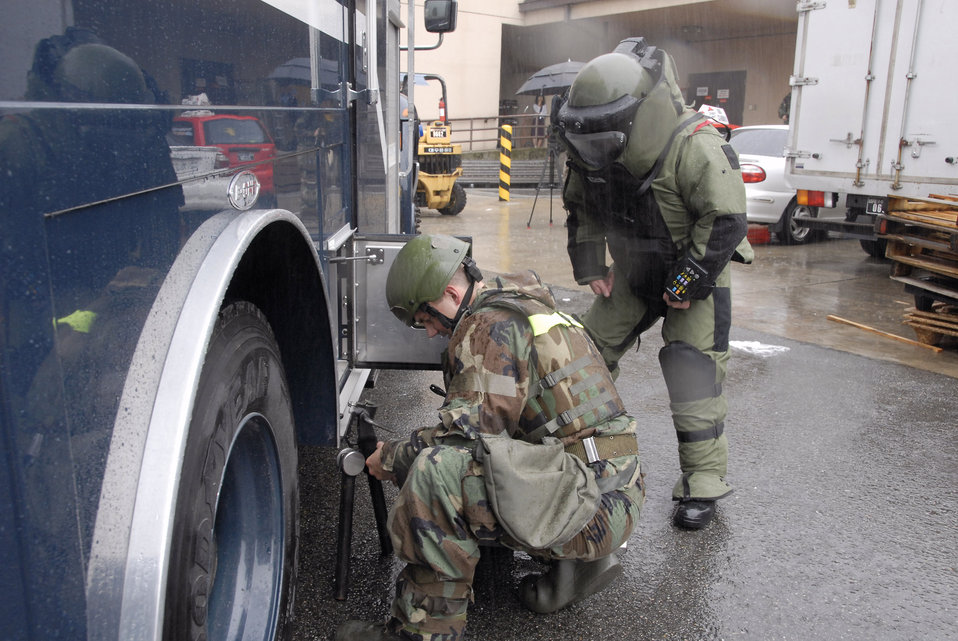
Handle with care

Airman Matthew Morris and Tech. Sgt. Jared Worstell (in bomb suit), explosive ordnance disposal Airmen with the 51st Civil Engineer Squadron at Osan Air Base, South Korea, prepare to use an F6A robot to remove a suspicious package from the base post office during a base-wide exercise July 24. The robot is equipped with several television cameras for remote viewing and a dexterous arm for hazardous tasks.